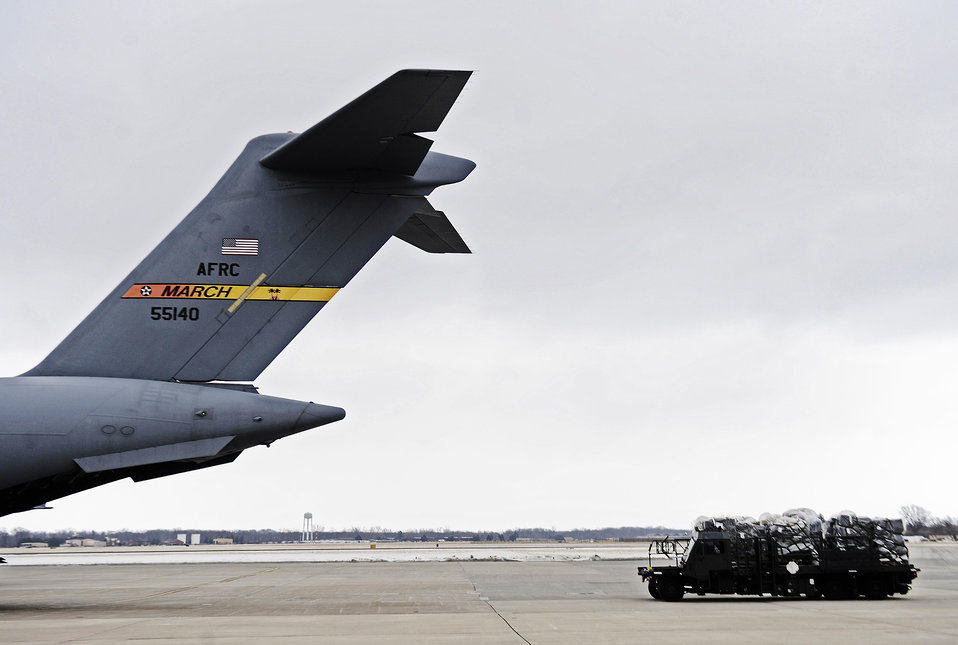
Humanitarian aid

Officials in a cargo truck from the 375th Logistics Readiness Squadron pull up behind a C-17 Globemaster III to load humanitarian aid supplies Feb. 7, 2011, at Scott Air Force Base, Ill.